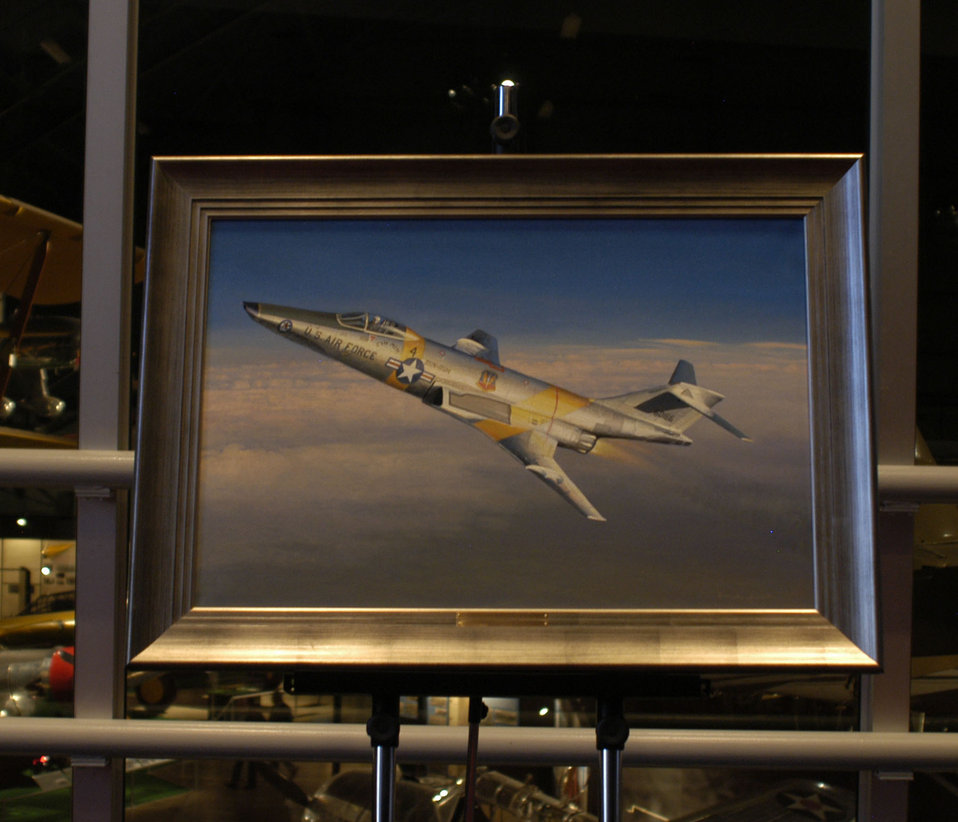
50th anniversary of significant Air Force mission remembered

A close-up of